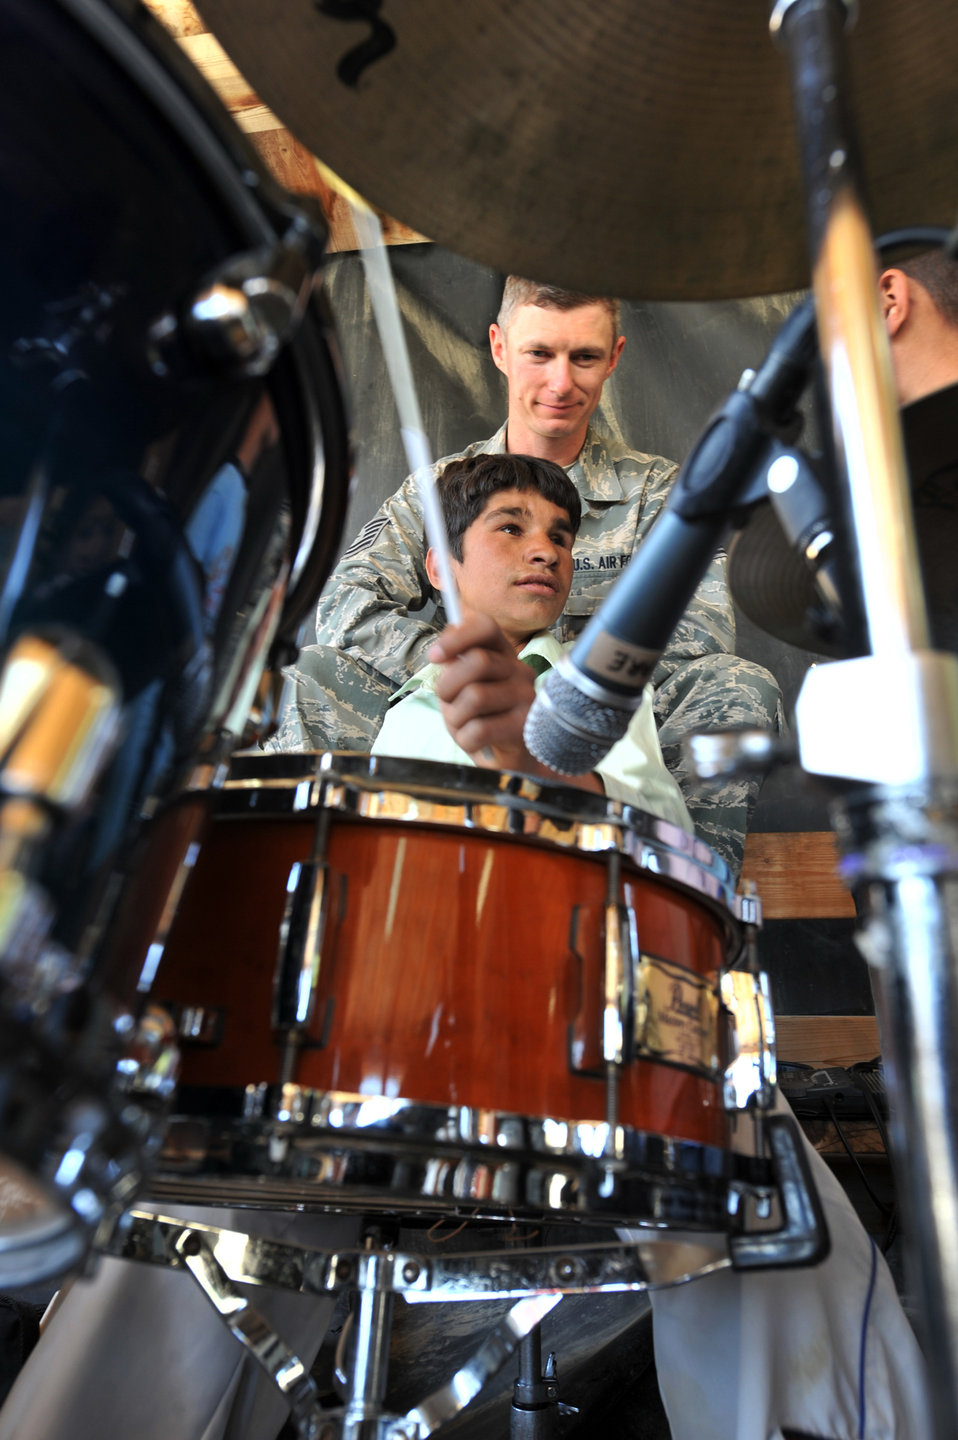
AFCENT band performs for Afghans

Tech. Sgt. Tim Stombaugh, a U.S. Air Force Central Expeditionary Band drummer and vocalist, allows Afghan children to play his drum set, April 20, 2011, at the Egyptian Field Hospital at Bagram Airfield, Afghanistan.